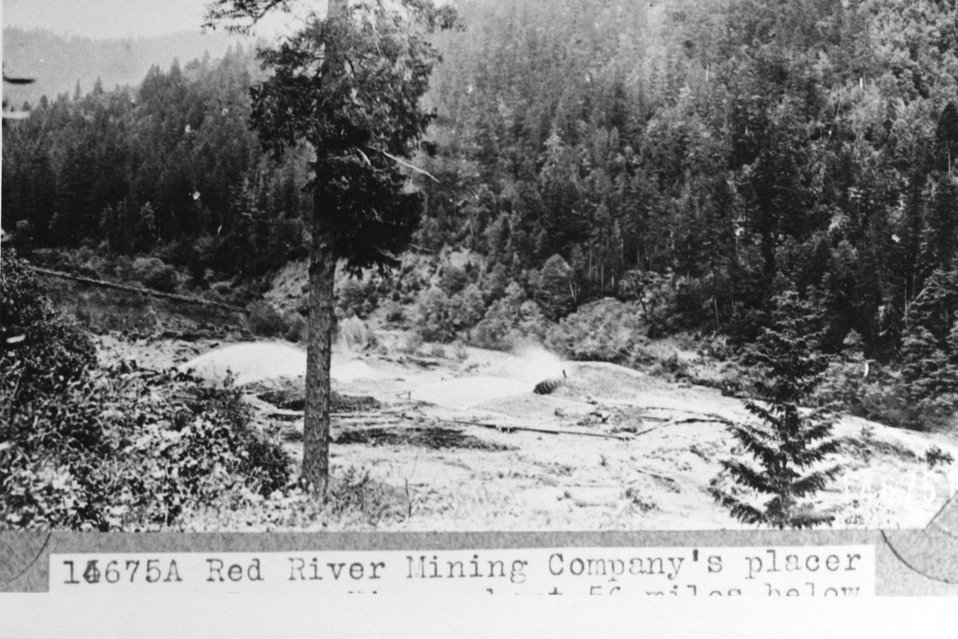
Red River Mining Company's placer mine.